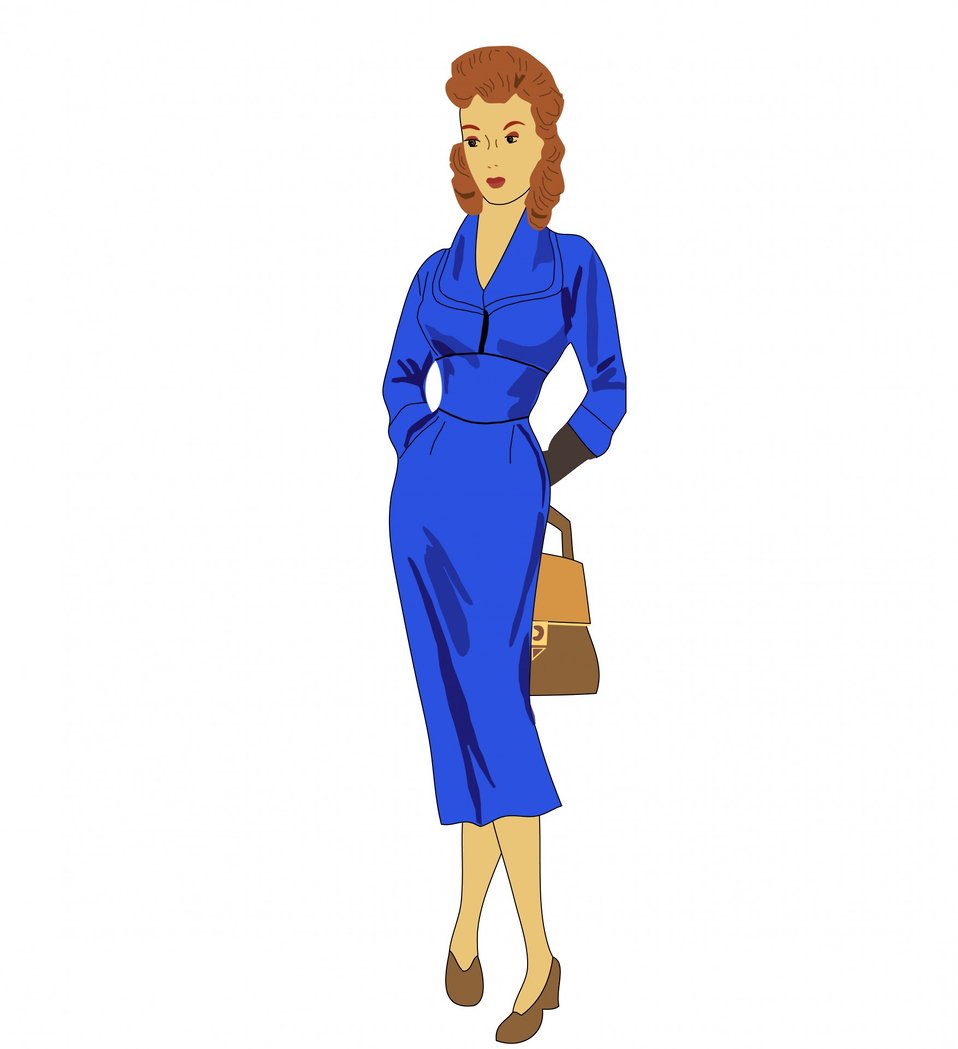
Woman vintage 1940s clothing

Vintage 1940s woman in fashionable clothing of the day.